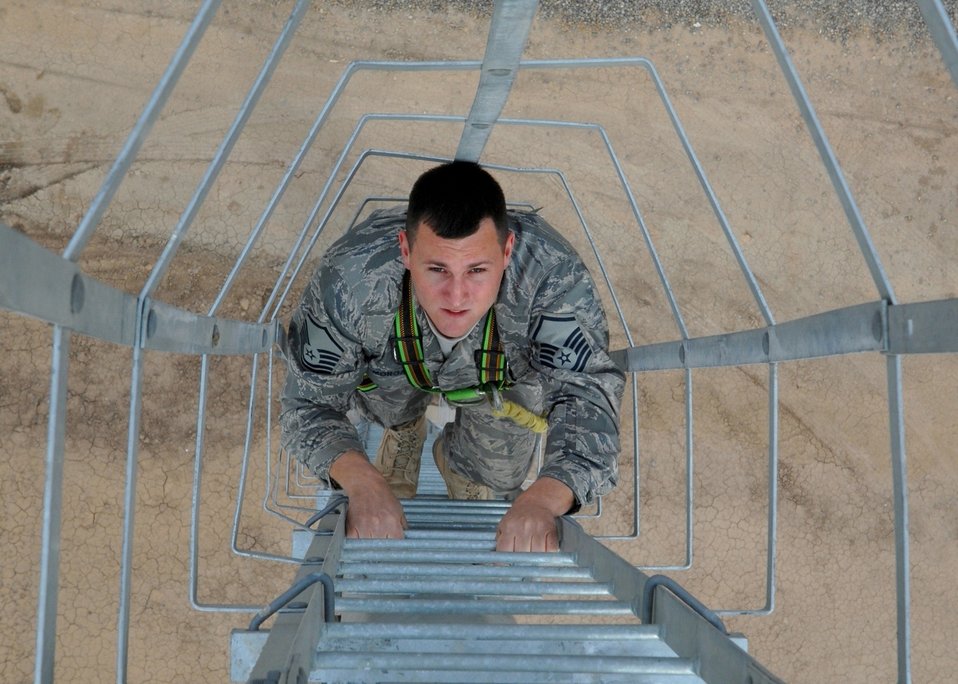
One step at a time

Master Sgt. Mark Morgan climbs a 100-foot light tower at Balad Air Base, Iraq, Feb. 25. He is an electrical systems technician deployed from Eglin Air Force Base, Fla.